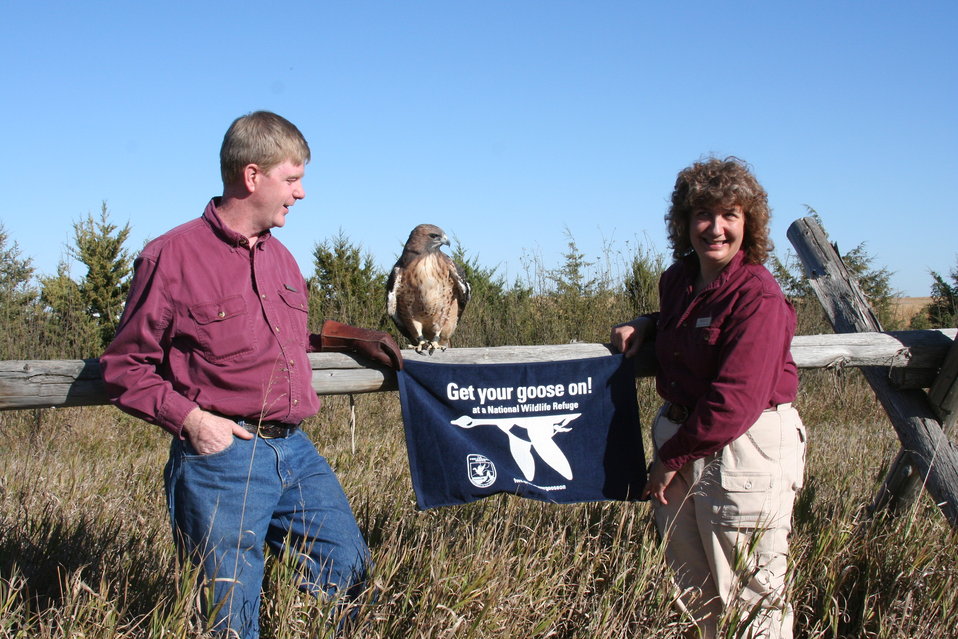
Get Your Goose On! - Raptor Style!

During Huron Wetland Management District's 2012 Prairie Festival, visitors were treated to an up close and personal look at various birds of prey.